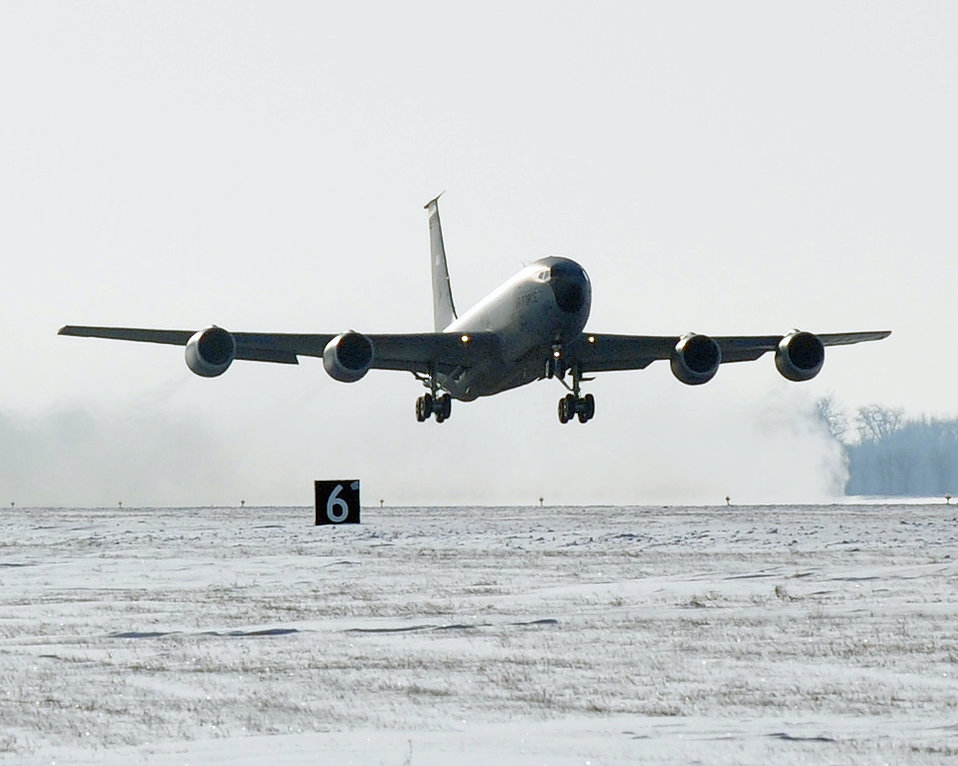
Last tanker leaves Grand Forks

The final KC-135 Stratotanker takes off Dec. 4, 2010, from Grand Forks Air Force Base, N.D. The departure of this aircraft signaled the end of the KC-135 air refueling mission at Grand Forks AFB. The plane was relocated to McConnell AFB, Kan.